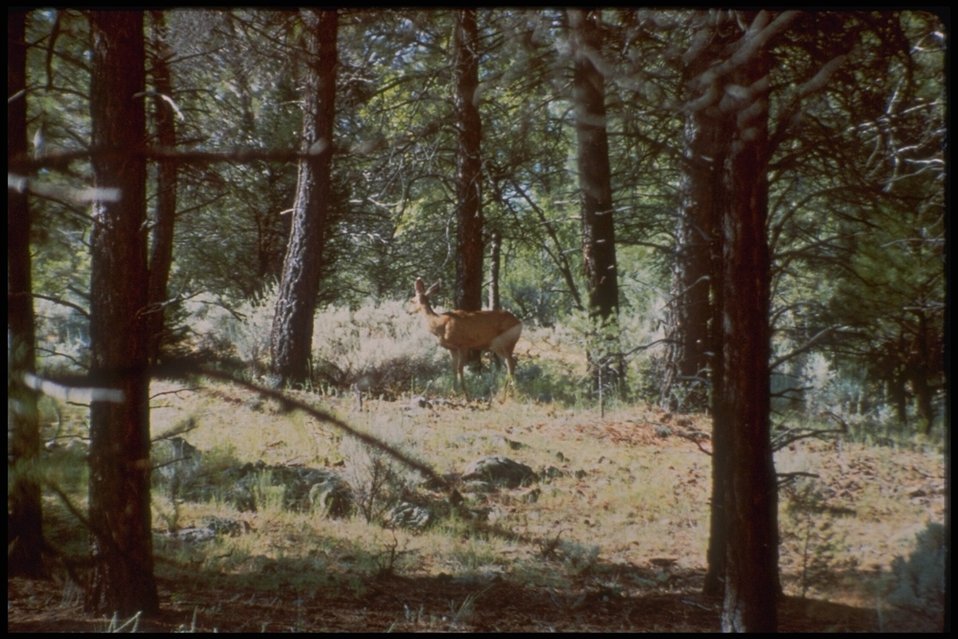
More of Arizona's wildlife.